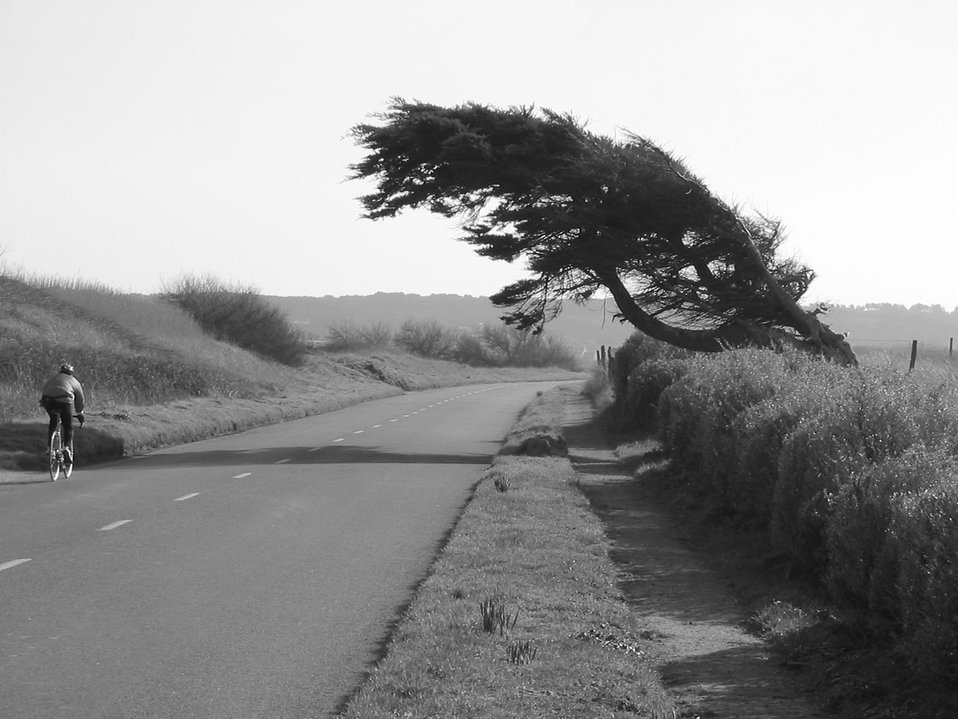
Tree on coast

A tree on the coast where permanent wind bended it..